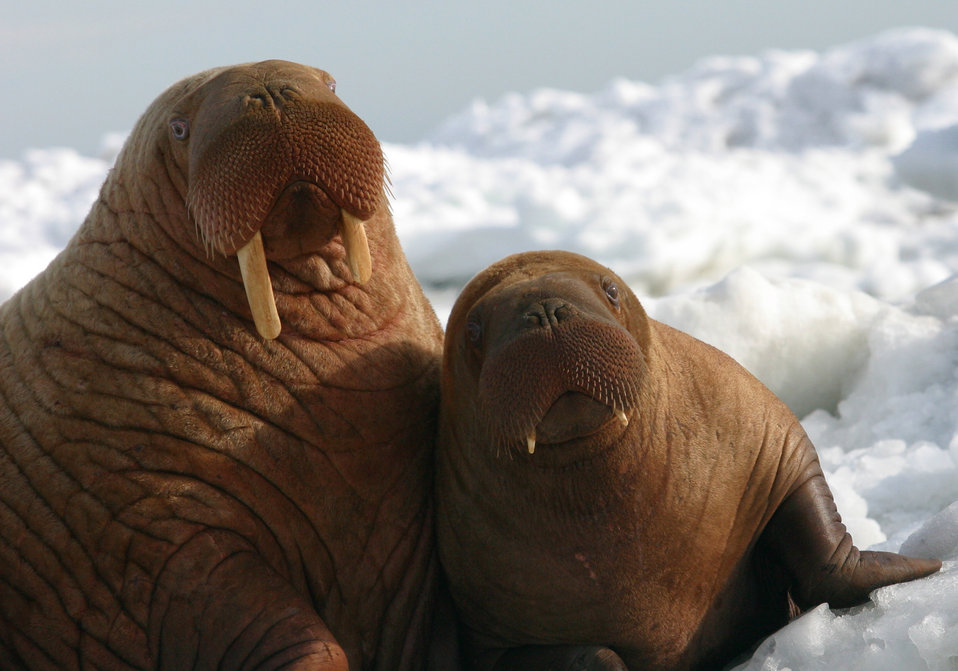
Walrus cow and calf on the ice.